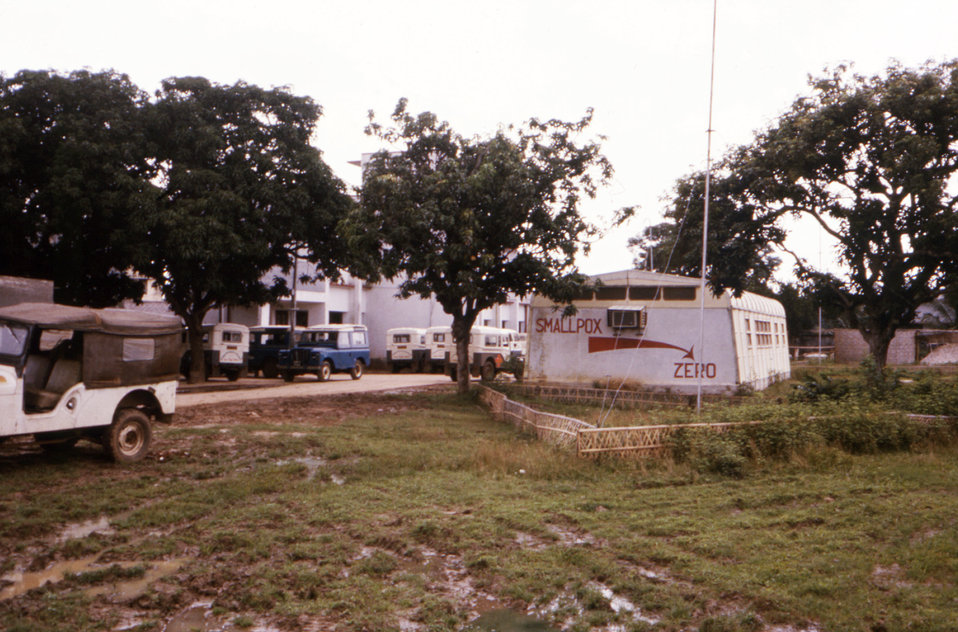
This historic image was captured during the smallpox eradication efforts of the 1970s, which successfully rid the World of this disease. This was the base camp in Dhaka, Bangladesh, where healthcare teams would meet to strategize their epidemiologic-based approach that would lead to disease eradication. Note the radio transmission station located in the foreground.